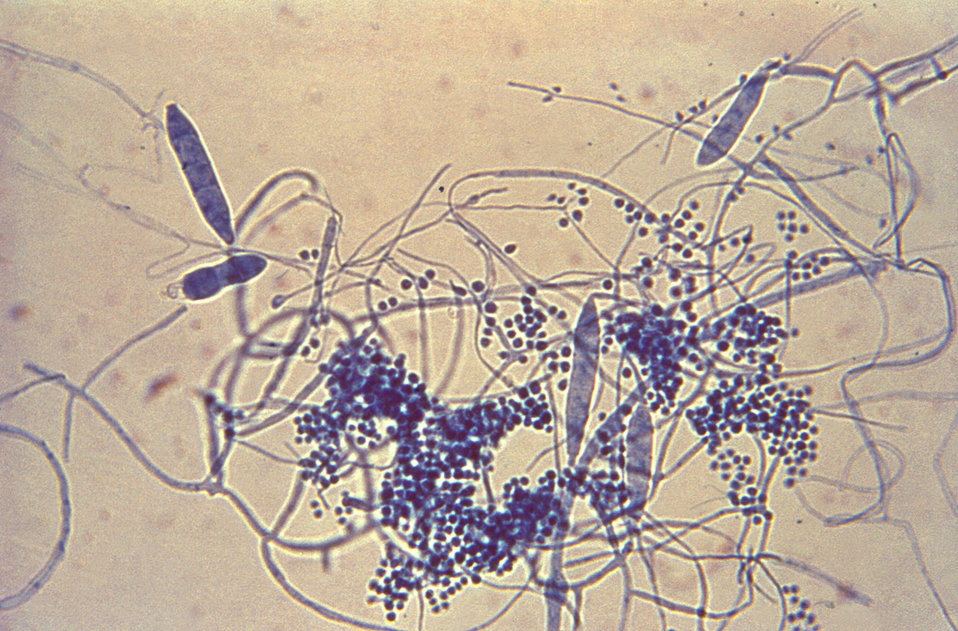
Under a magnification of 475X, this photomicrograph depicts the ultrastructural features exhibited by the dermatophytic fungus, Trichophyton mentagrophytes including numbers of microconidia and macroconidia, which are the organism's reproductive cells, otherwise known as spores. These fungal organisms were cultivated atop wort agar, which is a medium ideal for the growing of fungi, particularly yeasts, while inhibiting bacterial growth. The chemical composition of wort agar duplicates that of naturally-occurring wort, which is a substance produced during the mashing process used in the creation of beer or whisky.